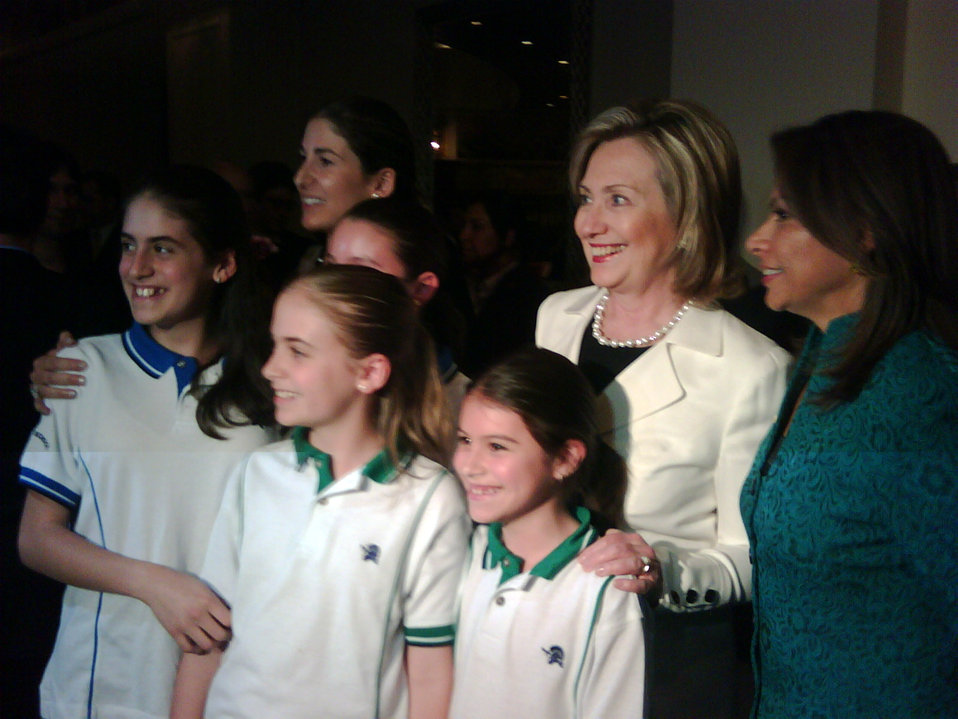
Secretary Clinton Meets With Costa Rican President-elect

U.S. Secretary of State Hillary Rodham Clinton and Costa Rican President-elect Laura Chinchilla Miranda talk with children in Costa Rica after a long day at the Pathways to Prosperity Conference in San José, Costa Rica, March 4, 2010.